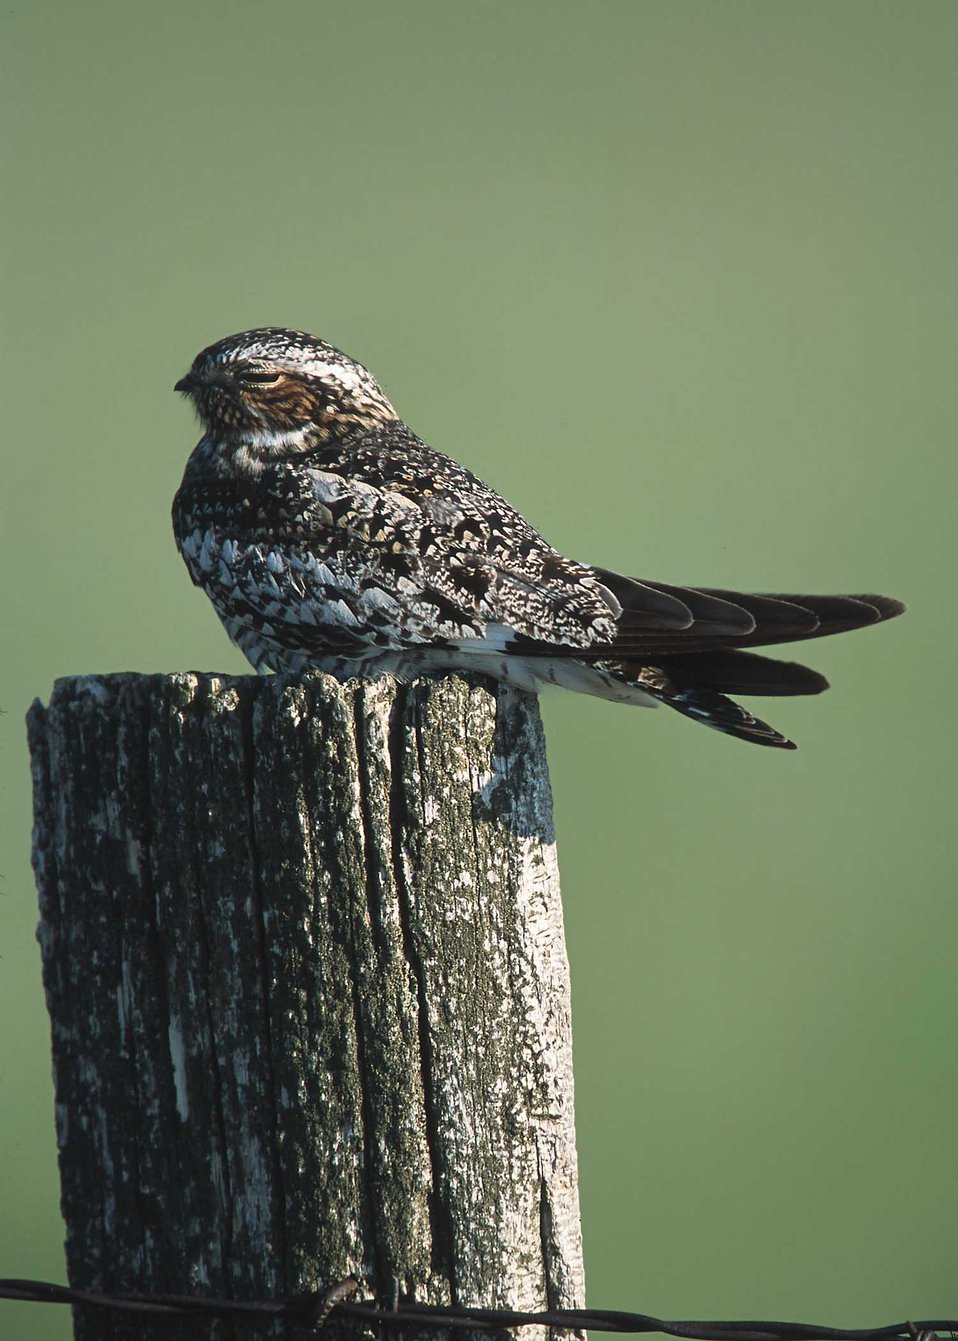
Common Night Hawk.